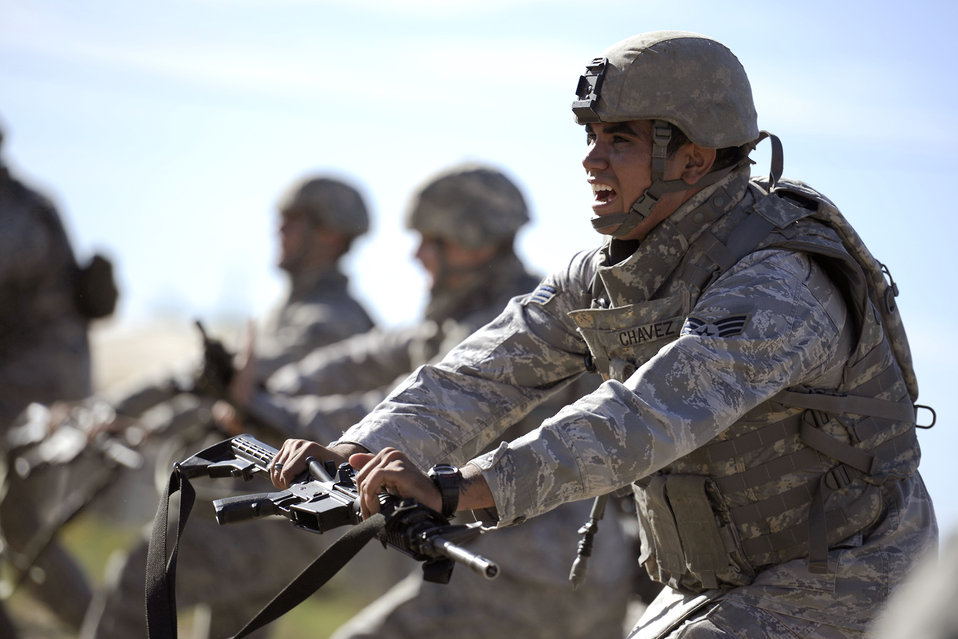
Security forces prepare for combat at Hill

Senior Airman Adrian Chavel practices a defensive rifle fighting technique during security forces combat readiness training Sept. 13, 2010, at Hill Air Force Base, Utah. Airman Chavel is a security forces patrolman with the 75th Security Forces Squadron.